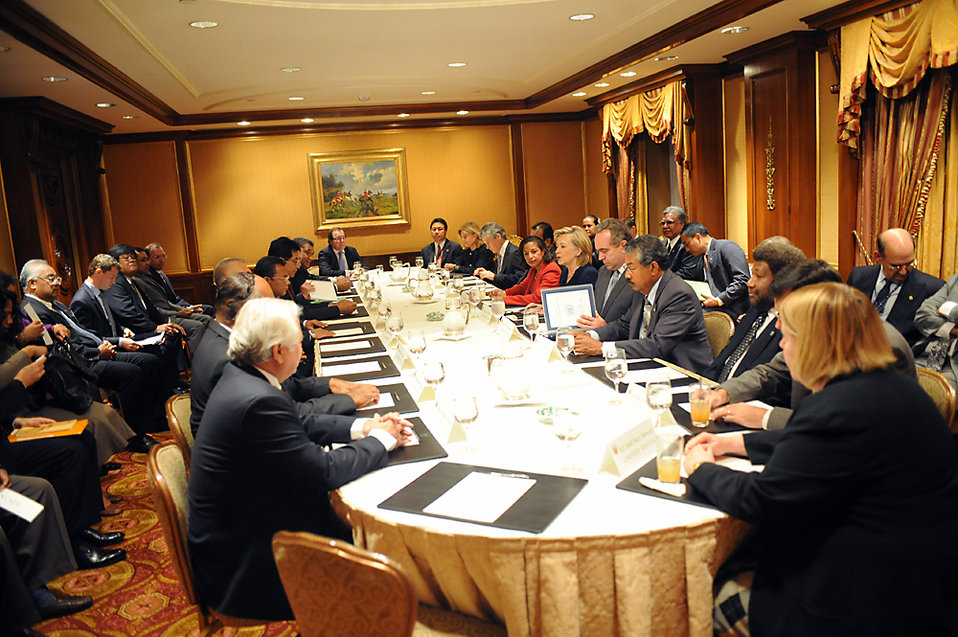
UNGA 2009: Secretary Clinton Meets With Pacific Island Leaders

U.S. Secretary of State Hillary Rodham Clinton meets with Pacific Island leaders at the Waldorf Astoria hotel during the 64th Session of the UN General Assembly in New York City, New York September 21, 2009.